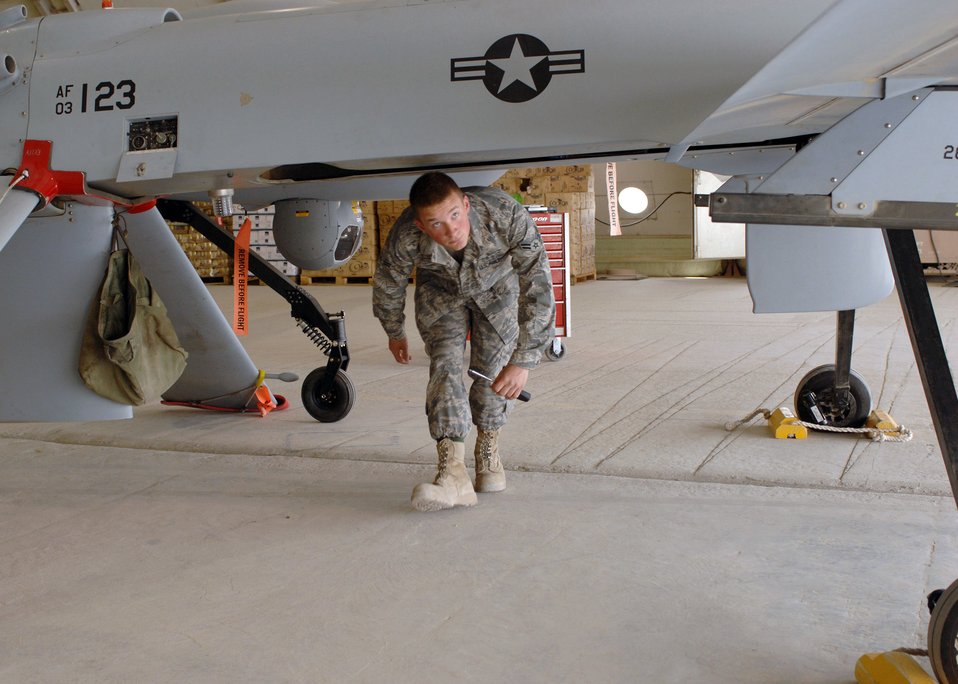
Predators of the mountains

Airman 1st Class Troy Spence, a 62nd Expeditionary Reconnaissance Squadron crew chief, inspects an MQ-1 Predator during routine maintenance at Bagram Air Base, Afghanistan. The unit's primary role is to launch and recover Predators supporting Operation Enduring Freedom. Airman Spence is deployed from the 432nd Aircraft Maintenance Squadron at Creech Air Force Base, Nev.